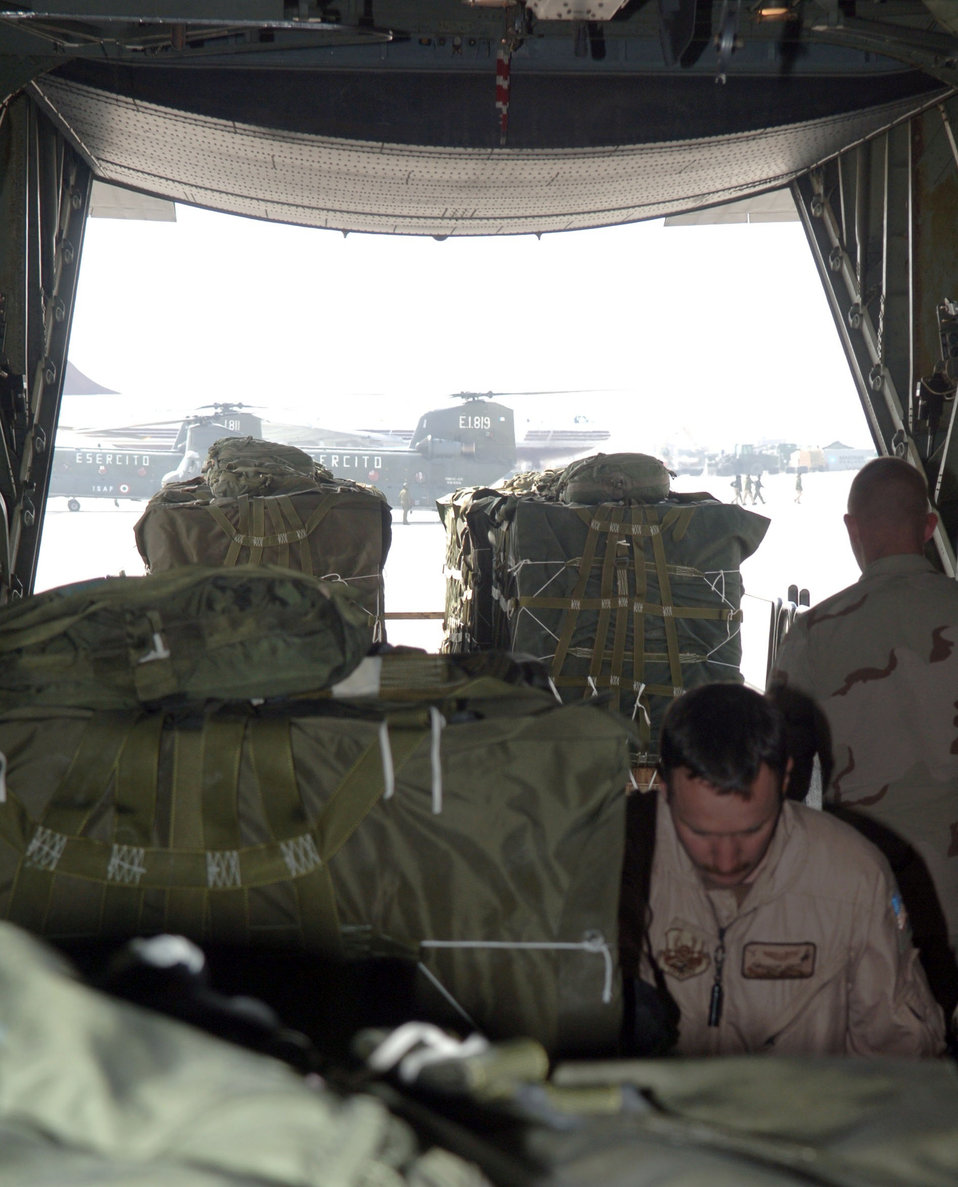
Airdrop in Afghanistan

BAGRAM AIR BASE, Afghanistan (AFPN) -- Staff Sgt. Trenton Lloyd loads an 800-pound pallet of firewood onto a C-130 Hercules for a humanitarian airdrop in southern Afghanistan Jan. 24. Sergeant Trenton is a C-130 loadmaster with the 774th Expeditionary Airlift Squadron. C-130s from the 774th EAS have delivered medical supplies, blankets, small heaters, firewood, blankets and food to help Afghan civilians in remote regions get through the winter. Sergeant Lloyd is with the Air National Guard's 153rd Airlift Wing at Cheyenne, Wyo.